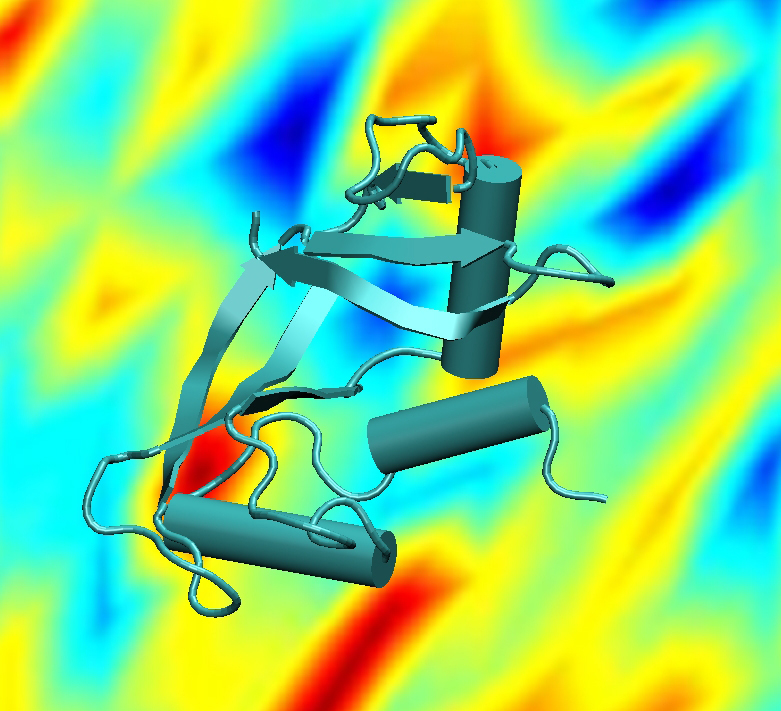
Preservatives like sugar surround and protect complex molecules (foreground), but varying degrees of movement within the preservativesymbolized by the different colors in the backgroundare a major contributor to spoilage. Recent NIST findings concerning the fundamental behavior of mixtures (such as the combination above) could dramatically extend the shelf lives of vaccines and other biological materials.